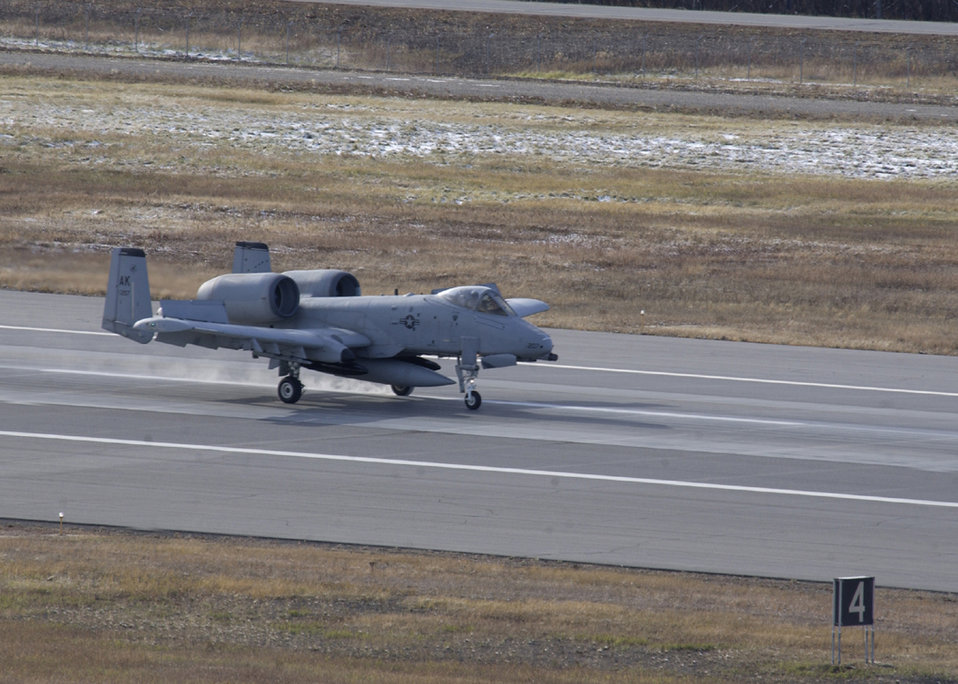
Home at last

EIELSON AIR FORCE BASE, Alaska -- The first O/A-10 Thunderbolt ll from the 355th Fighter Squadron lands here for the first time in six months on Sept. 29. The A-10's are returning after a six-month deployment to Bagram Air Base, Afghanistan. The 355th Fighter Squadron's primary missions now include air strike control, close air support, target interdiction, joint air attack team, combat escort, and combat search and rescue.